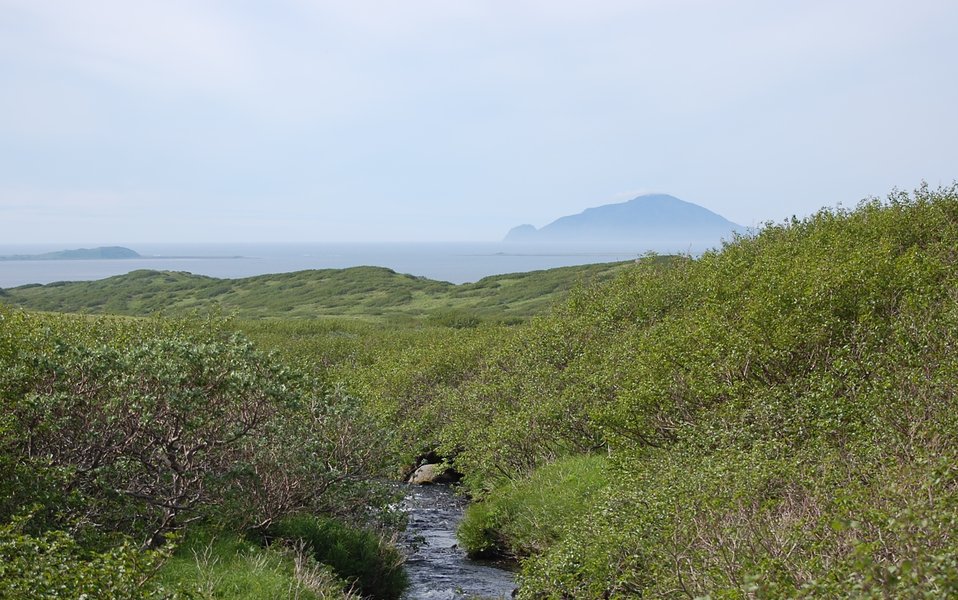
Izembek Landscape

In wilderness near Frosty Peak, Amak Island in background, Izembek National Wildlife Refuge